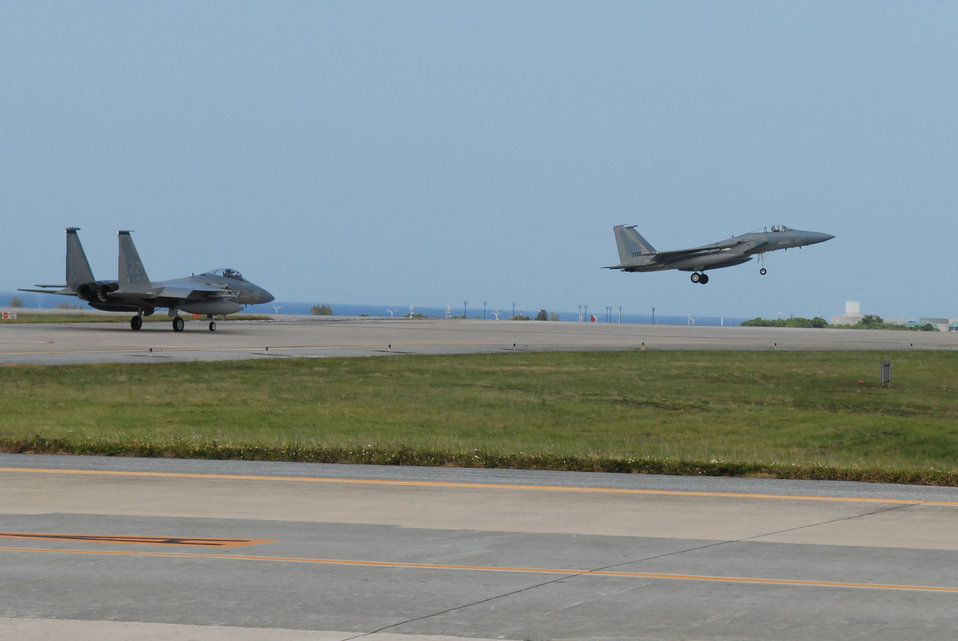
Testing the tower

Two F-15 Eagles depart from Kadena Air Base, Japan, during an combat capability exercise Oct. 17. The 18th Wing exercise from Oct. 13 to 19 tests the wing's ability to respond to a wartime situation.